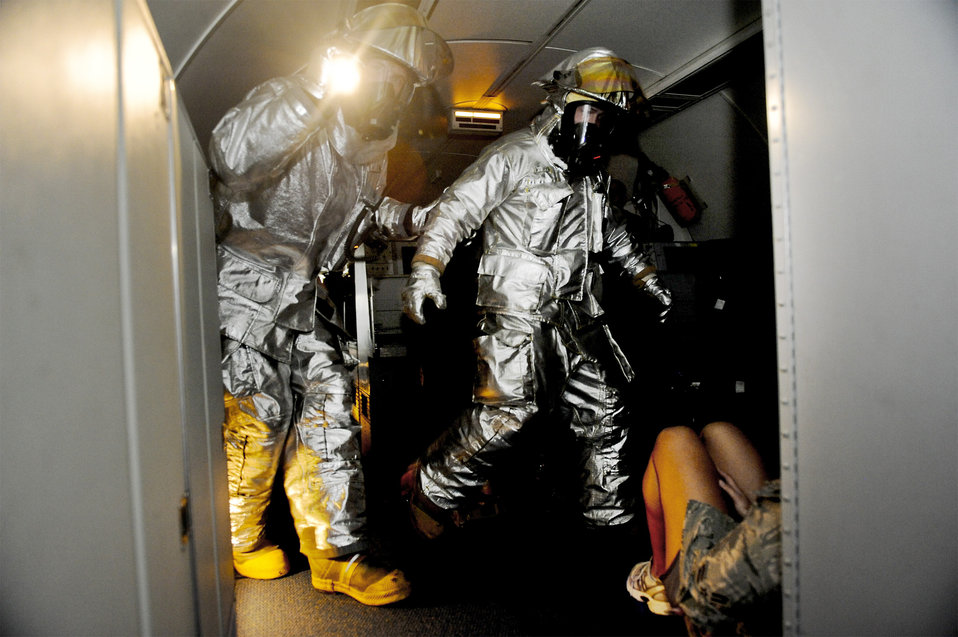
Kadena exercise

Firefighters from the 18th Civil Engineer Squadron search for victims aboard an E-3 Sentry during a simulated engine fire Jan. 19, 2011, at Kadena Air Base, Japan. The simulated engine fire was part of Beverly High 11-02, a local operational readiness exercise.